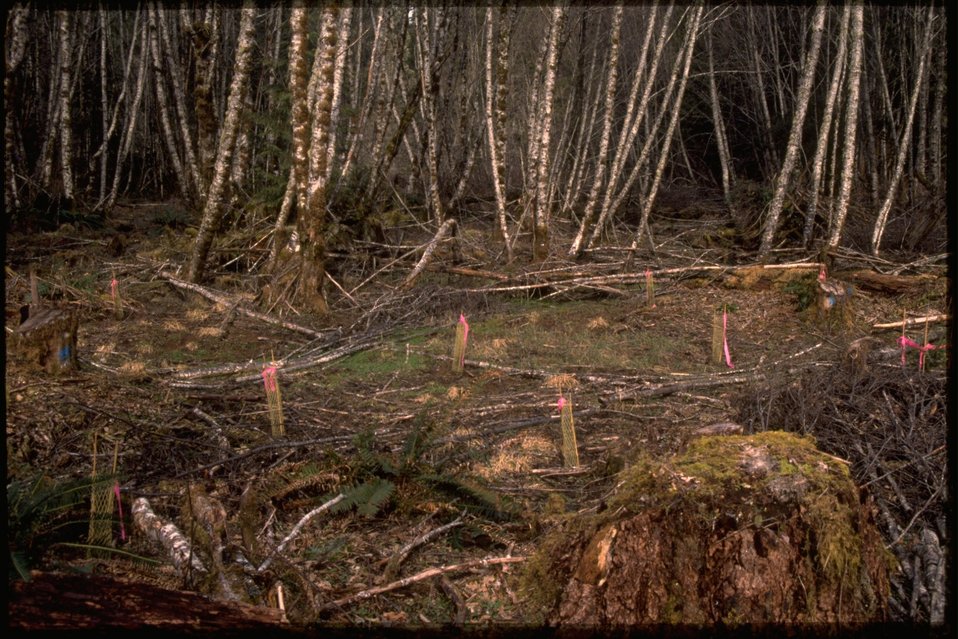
Riparian Under Plantation in the Alsea Area.